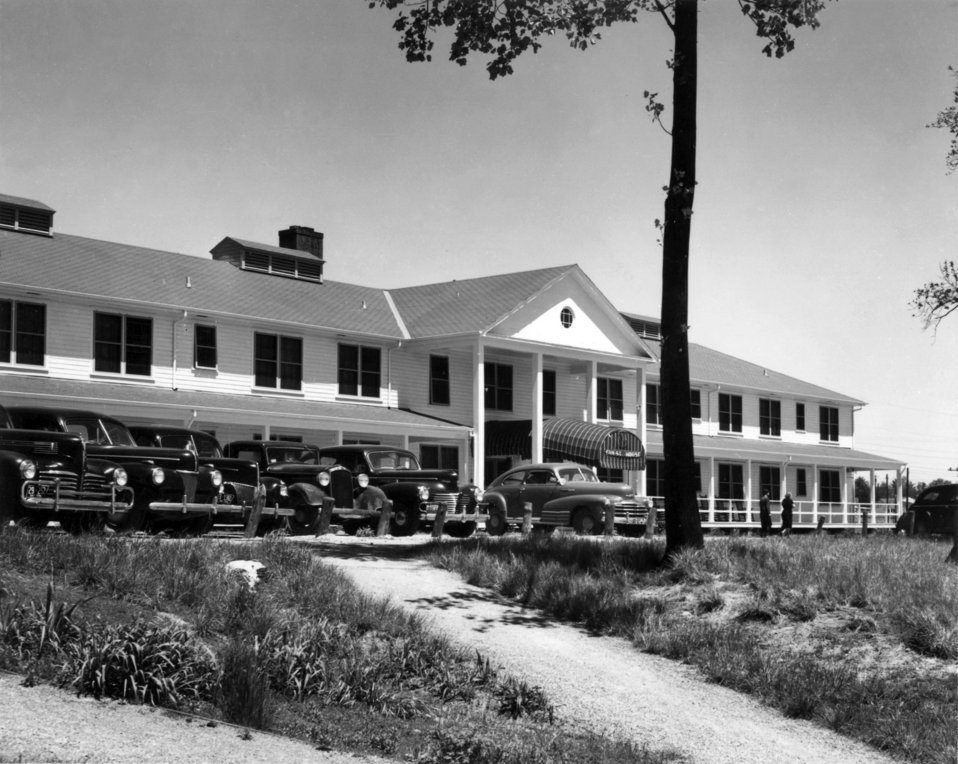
Guest House Oak Ridge

3437 DOE photo by Ed Westcott 5/1947 Oak Ridge Tennesssee